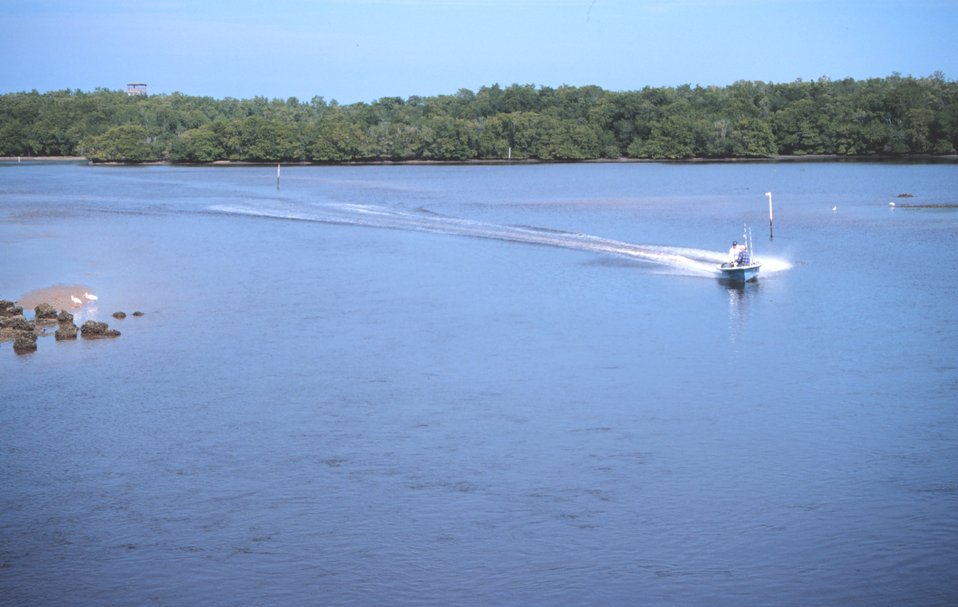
A recreational fisherman cutting a swath through the waterways